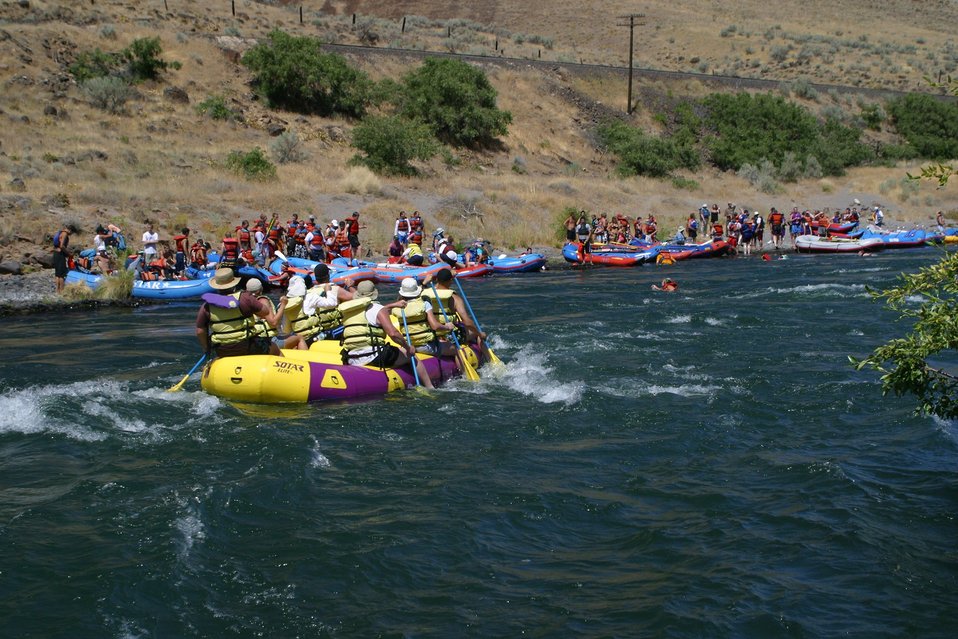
Elevator Rapids near Mile 46 on the Lower Deshcutes River. 7/26/03 Pelton Dam 3600 cfs: Moody Rapids 4300 cfs.